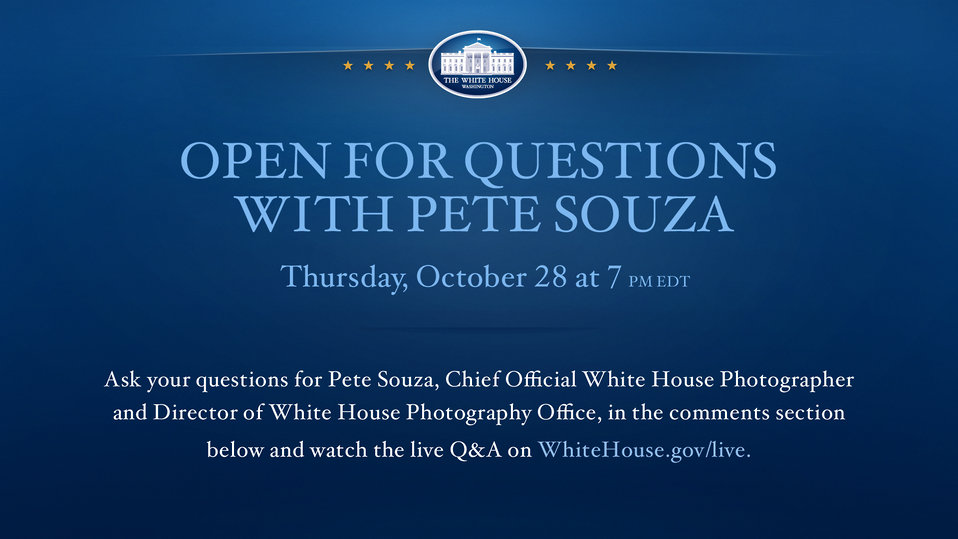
Open for Questions with Pete Souza

Join us for a live chat with Pete Souza on Thursday, October 28th at 7:00 p.m. EDT.

Ask your questions in advance in the comments section of this image. Please include the URL if referencing a specific photo in your question.